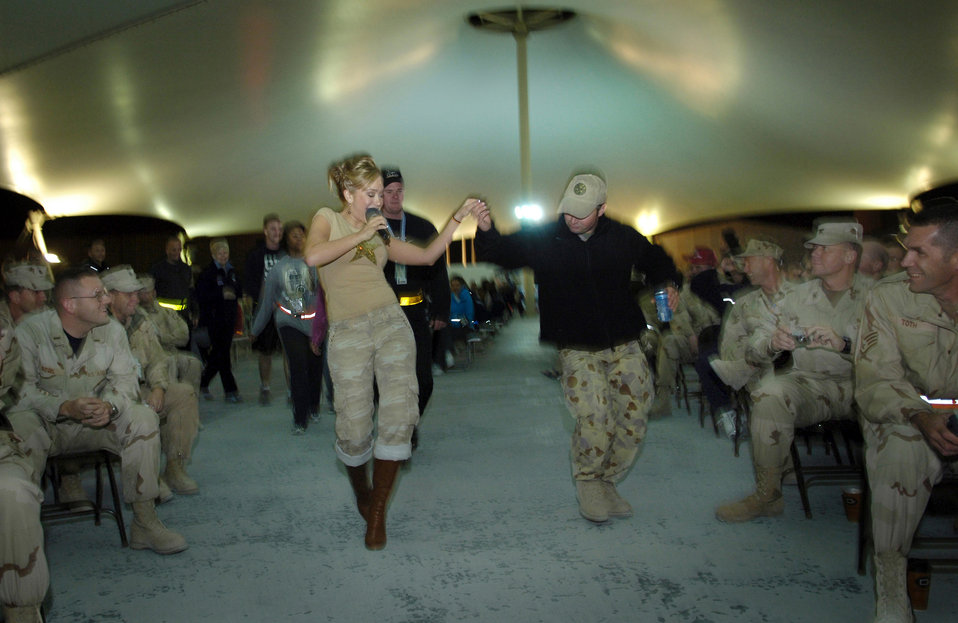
USO on parade

SOUTHWEST ASIA (AFPN) -- Pop singer Diana DeGarmo sings and dances with troops at a USO show at this desert base.